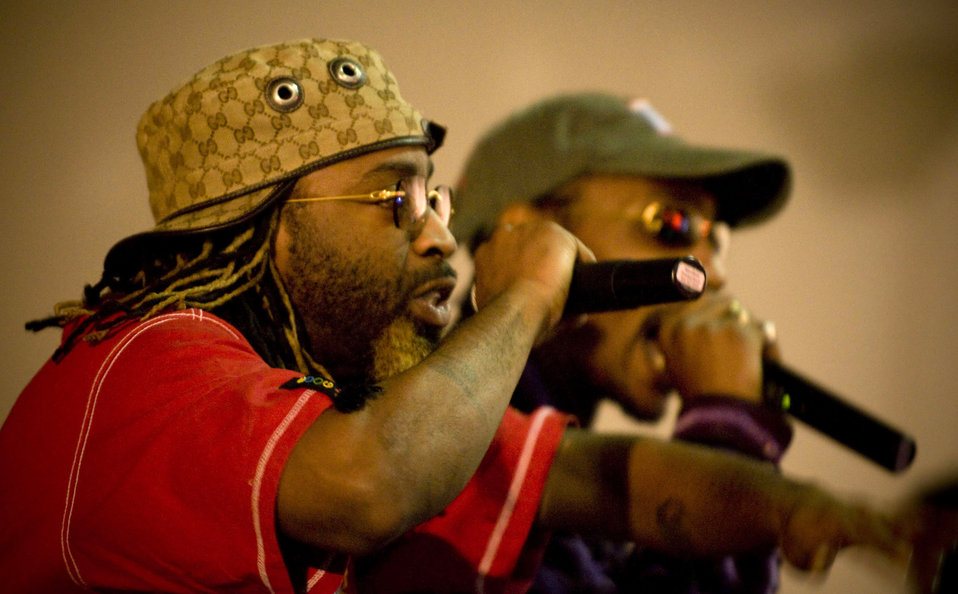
Around the world in 8 days

Kaine and D-Roc of the rap group Yin Yang Twins perform Nov. 13 at Bagram Airfield, Afghanistan. The Yin Yang Twins were part of the USO Tour entitled